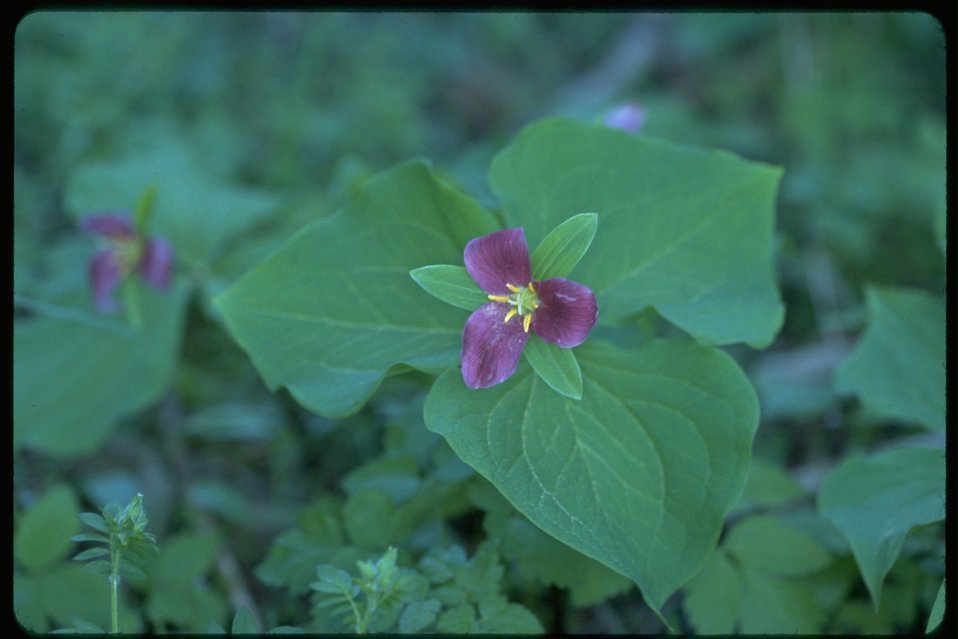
Long shot of purple Trillium.